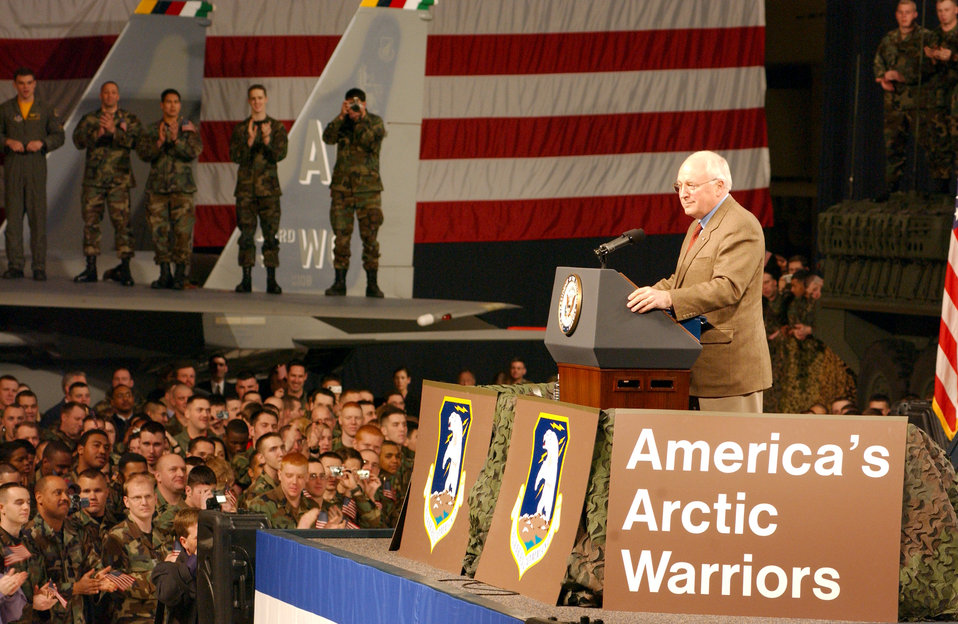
Vice president thanks servicemembers in Alaska

ELMENDORF AIR FORCE BASE, Alaska -- Vice President Dick Cheney thanked more than 3,000 servicemembers and families for their efforts in the war on terrorism during a visit here April 9.